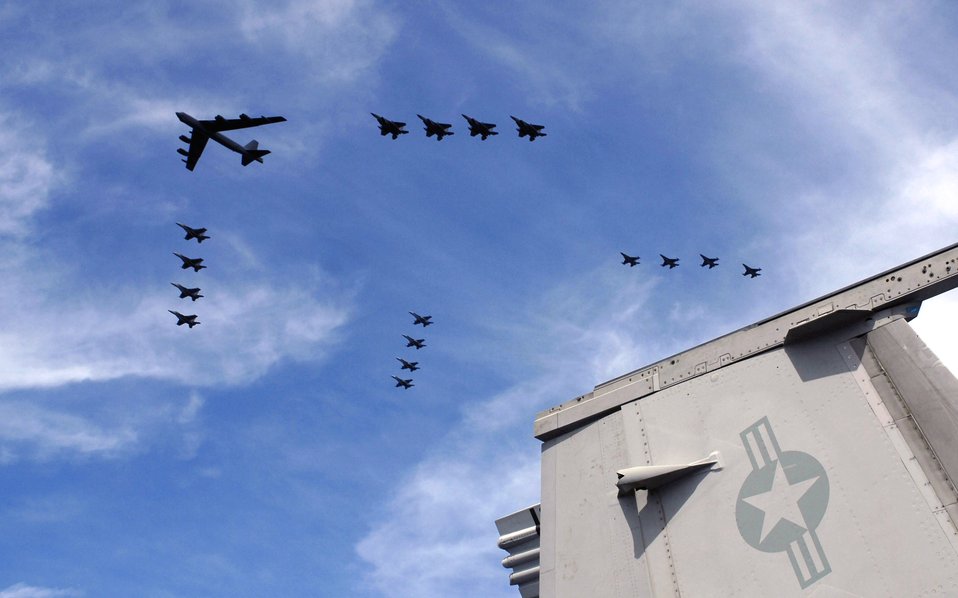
That?s a wrap

Aircraft from the Air Force, Navy and Marine Corps perform a fly by at the conclusion of Exercise Valiant Shield Aug. 14 in the Pacific region.